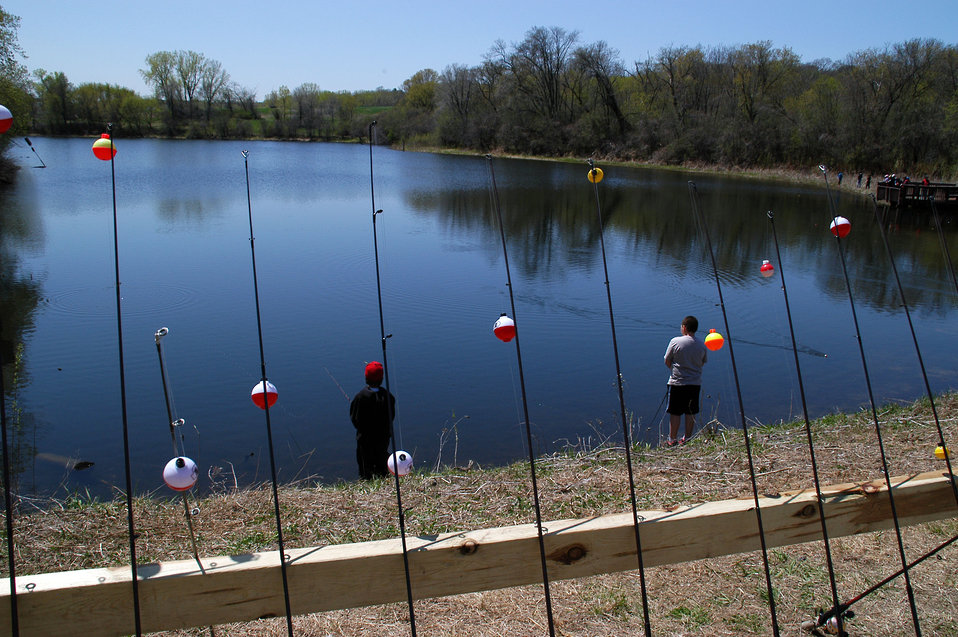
Fishing and Fishing Poles

Several students fish at the far end of the Bass Ponds.